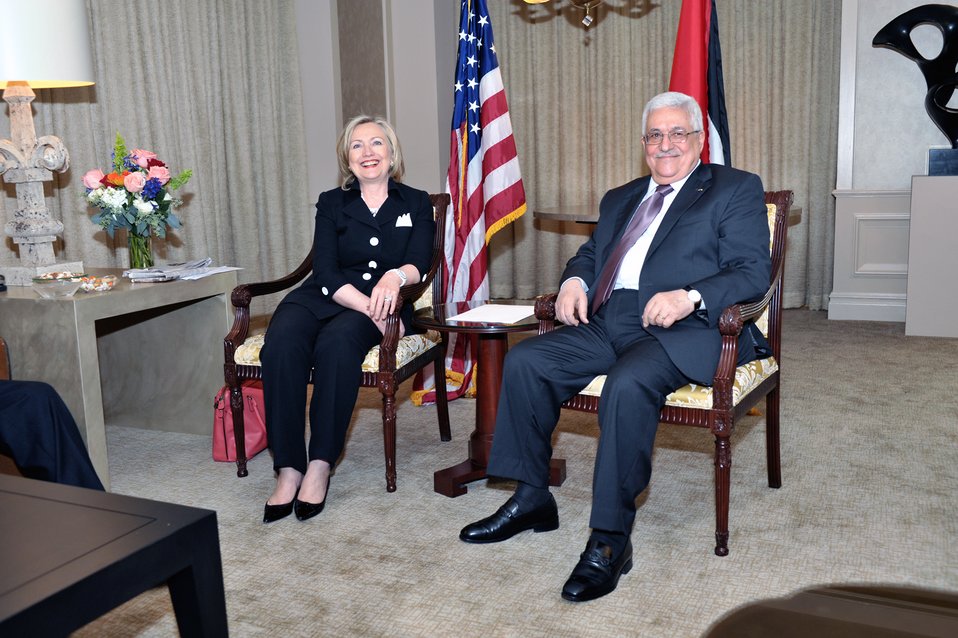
Secretary Clinton Holds a Bilateral Meeting With Palestinian Authority President Abbas

U.S. Secretary of State Hillary Rodham Clinton holds a bilateral meeting with Palestinian Authority President Mahmoud Abbas at the U.S. Department of State in Washington, D.C., on August 31, 2010.